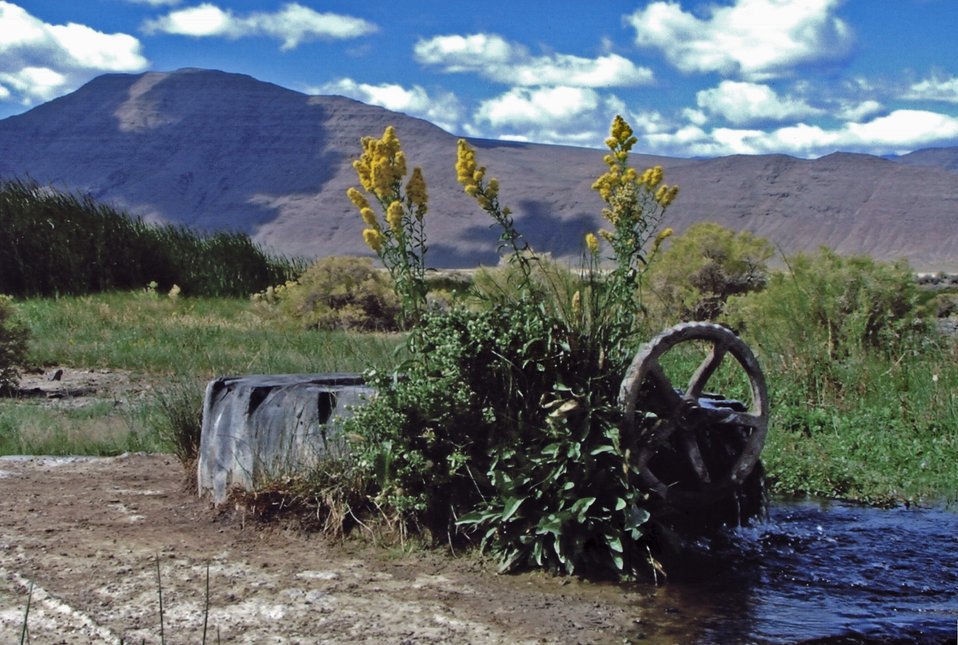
Golden Rod sprouts out ofan artesian well in Mickey Basin. Nick Miller, Burns Botany3